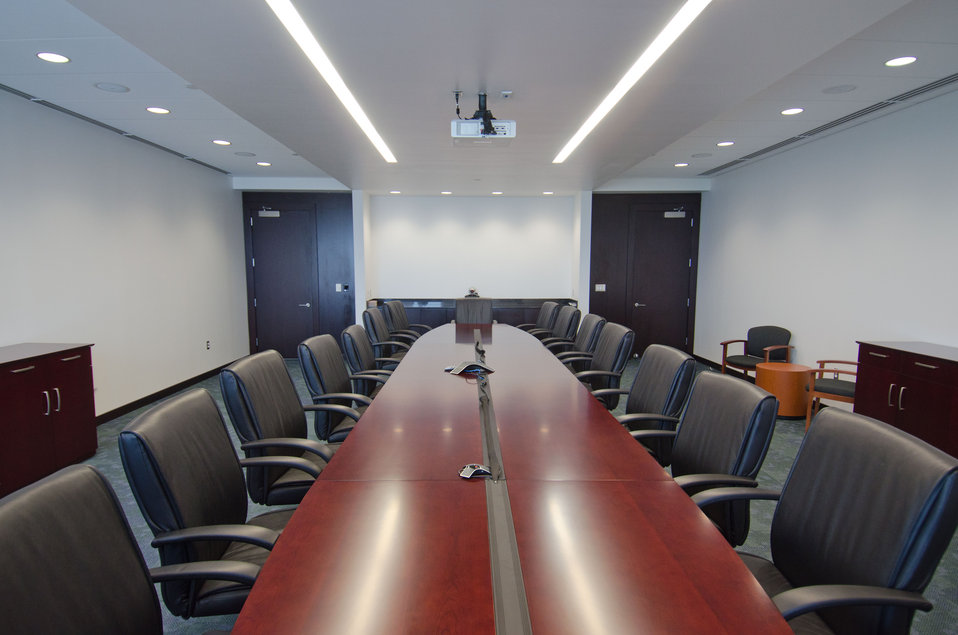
Executive multimedia conference room at Unilife, a medical device company focused on the design, development, manufacture and supply of a proprietary range of retractable syringes on Monday, April 20, 2011 in York, PA. In partnership with Sanofi-aventis, Mikron Group, and MDMA, U.S. Department of Agriculture Rural Development was able to guarantee $18,000,000 through its Business and Industry Guaranteed Loan Program to construct a custom-built, global headquarters and commercial production facility in York, Pennsylvania. The 165,000 sq. ft. facility was completed in late 2010 and can accommodate future growth as well as the Company’s projected demand from pharmaceutical and healthcare companies for its proprietary range of Unifill ready-to-fill (prefilled) and Unitract general purpose safety syringes. Stage one of the facility is designed to accommodate the production of up to 400 million Unilife syringes per year and to meet stringent pharmaceutical standards for primary drug containers. Adjacent to the manufacturing facility is Unilife’s global headquarters that support administrative, marketing, new product development, quality laboratories and other operational functions. Unilife, which first arrived in Pennsylvania in 2006. The company has doubled its employees for the past three years. There are approximately 150 employees, and they expect to double the number by 2015.